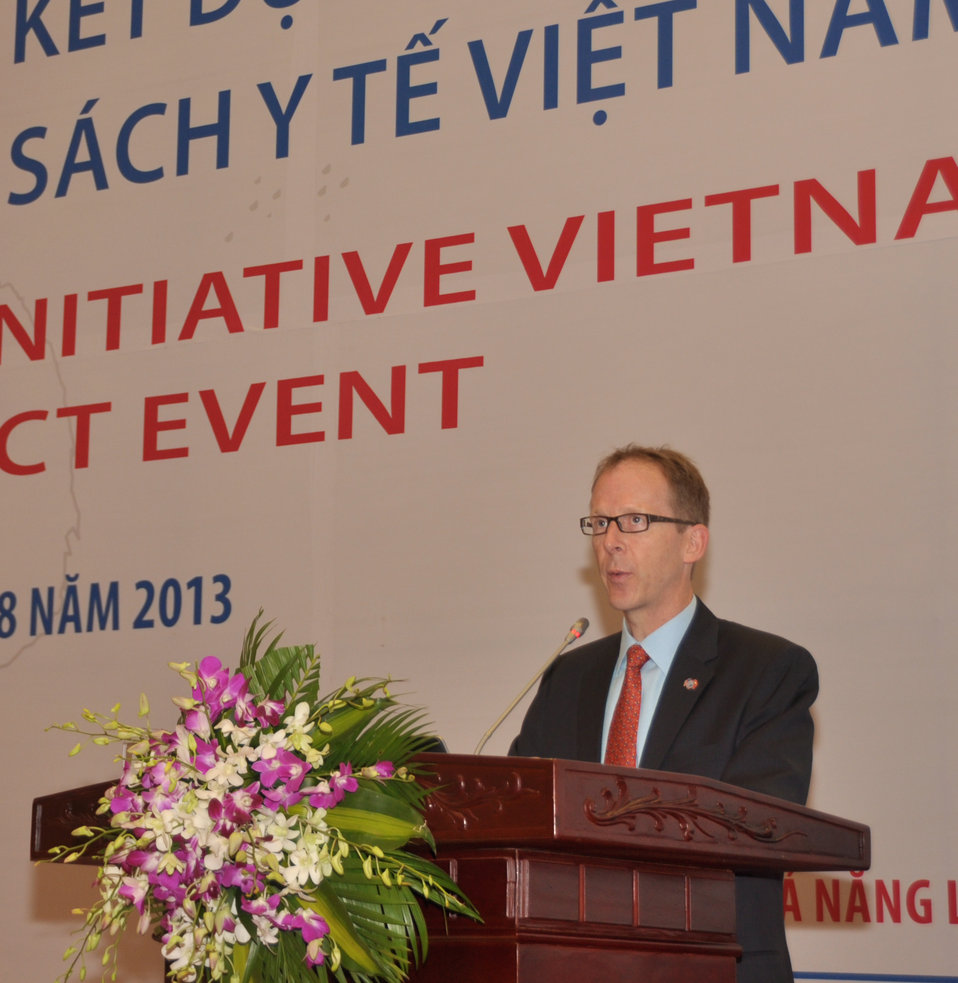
USAID Vietnam Mission Director Joakim Parker Addresses USAID Health Policy Initiative End of Project Workshop

Hanoi, August 14, 2013.